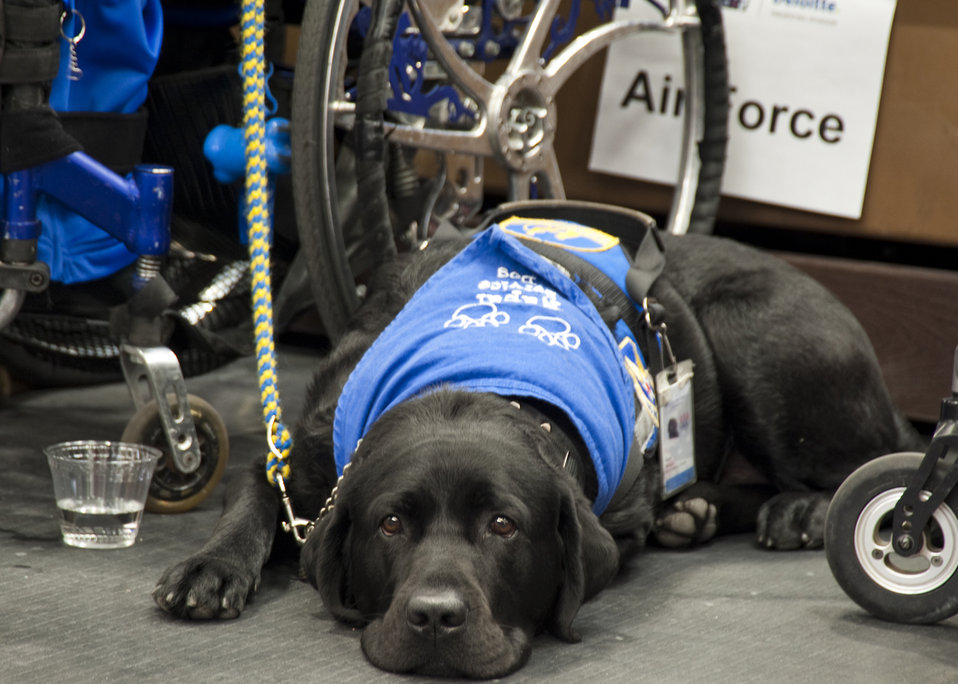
Ceremonies kick off 2011 Warrior Games

Retired Staff Sgt. Jason Morgan's dog Nepal waits patiently for the 2011 Warrior Games opening ceremony to begin May 16, 2011, at the U.S. Olympic Training Center in Colorado Springs, Colo. Sergeant Morgan is a member of the Air Force team.